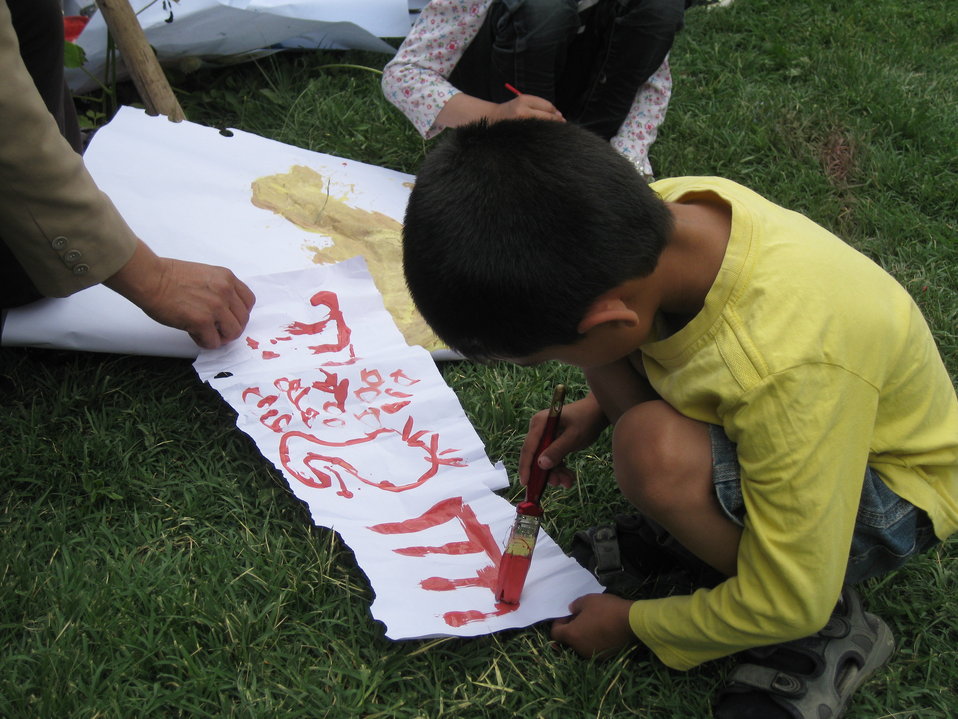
Afghan Youth Voices 087